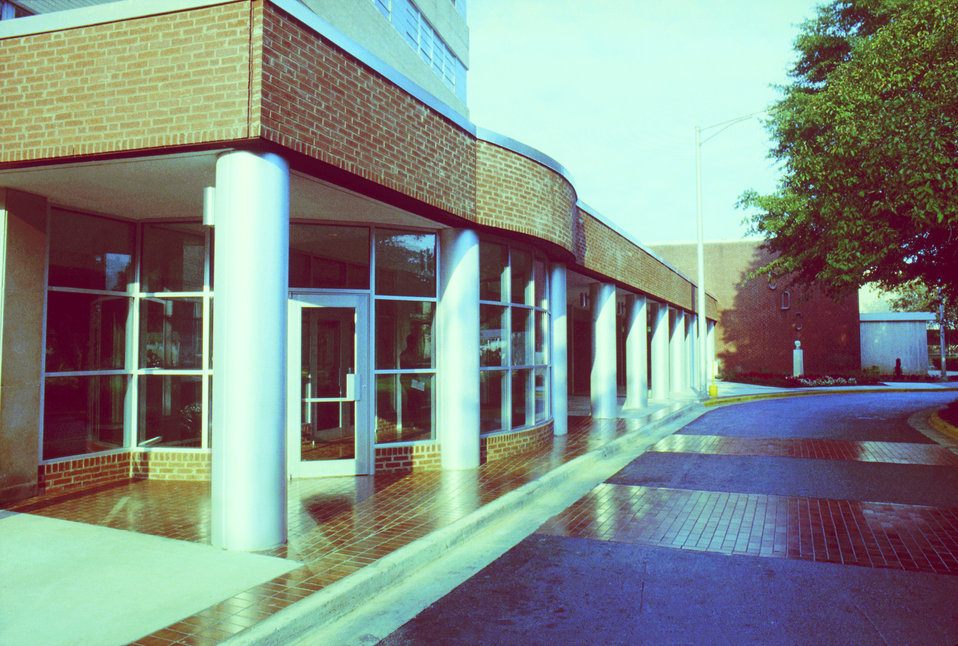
A photograph of the CDC, Building 1, Clifton Road, Atlanta, Georgia shot sometime during the 1980's.